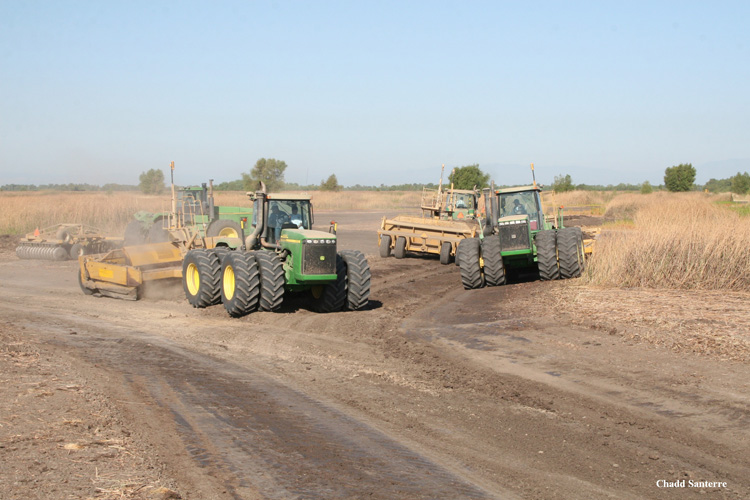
Enhance Habitat